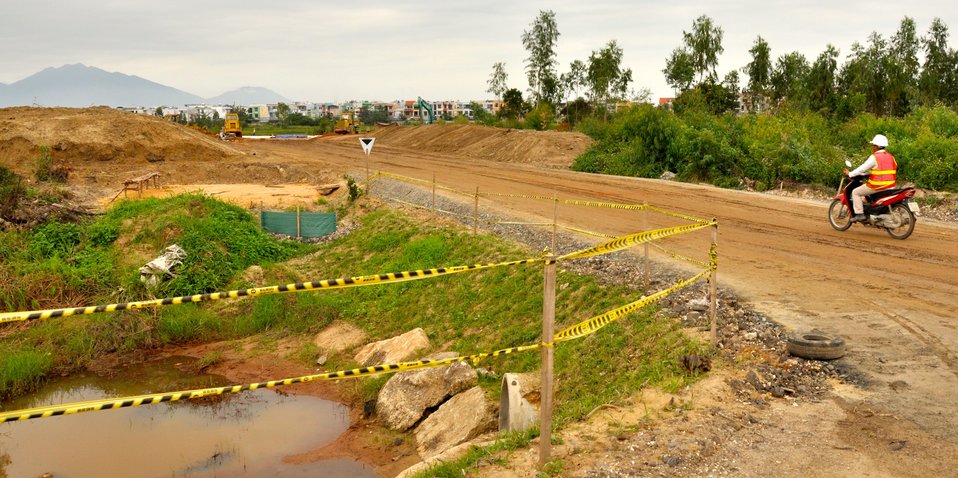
Site Preparation for Environmental Remediation of Dioxin Contamination at Danang Airport

Danang Airport, January 22, 2013